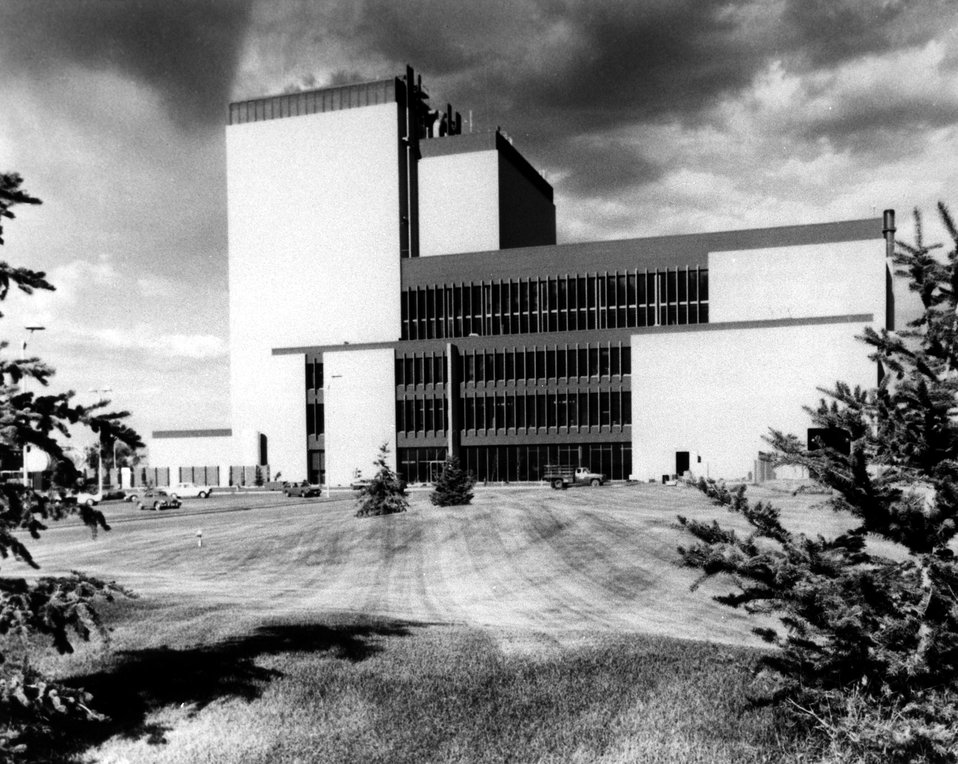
High temperature gas-cooled reactor power plant.